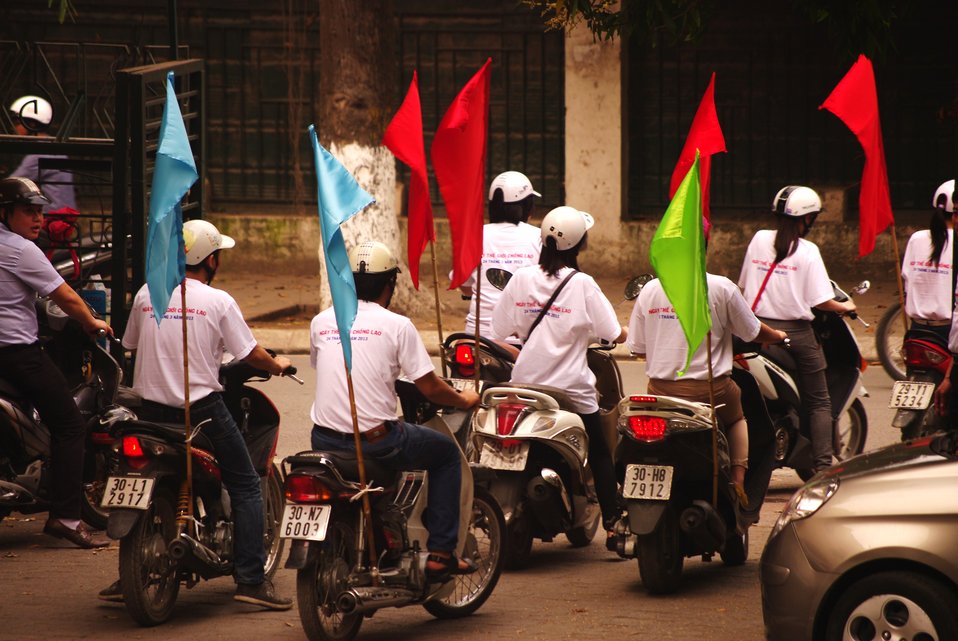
World TB Day in Hanoi: Students take to the streets with the message: Let's Stop TB in our Lifetime

March 23, 2013